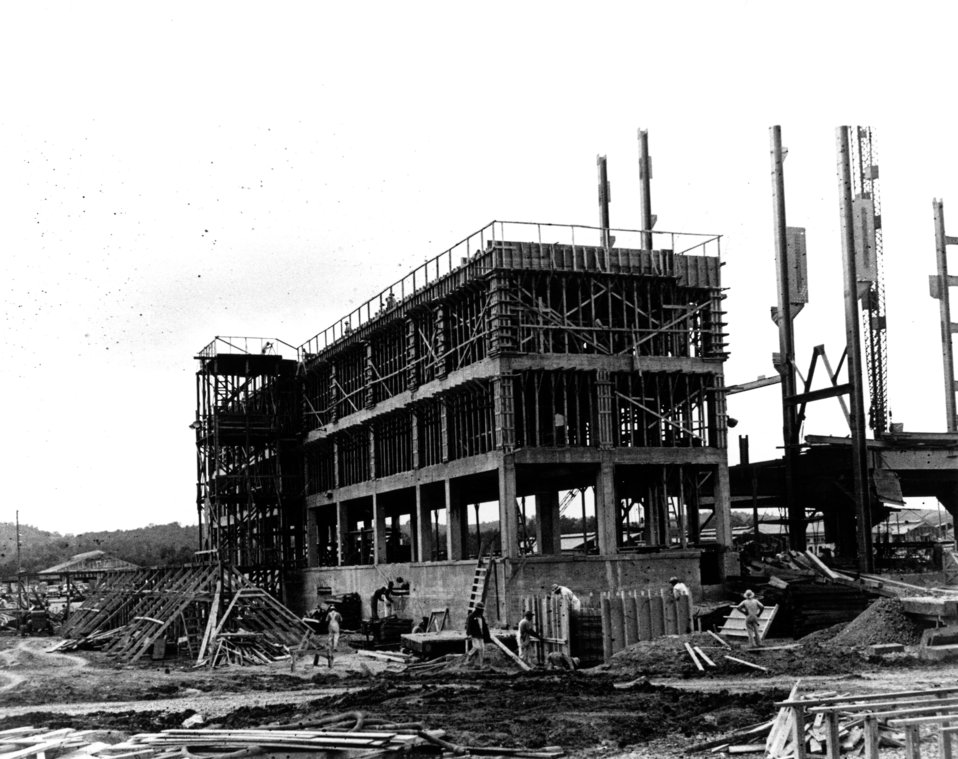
K-25 at Oak Ridge